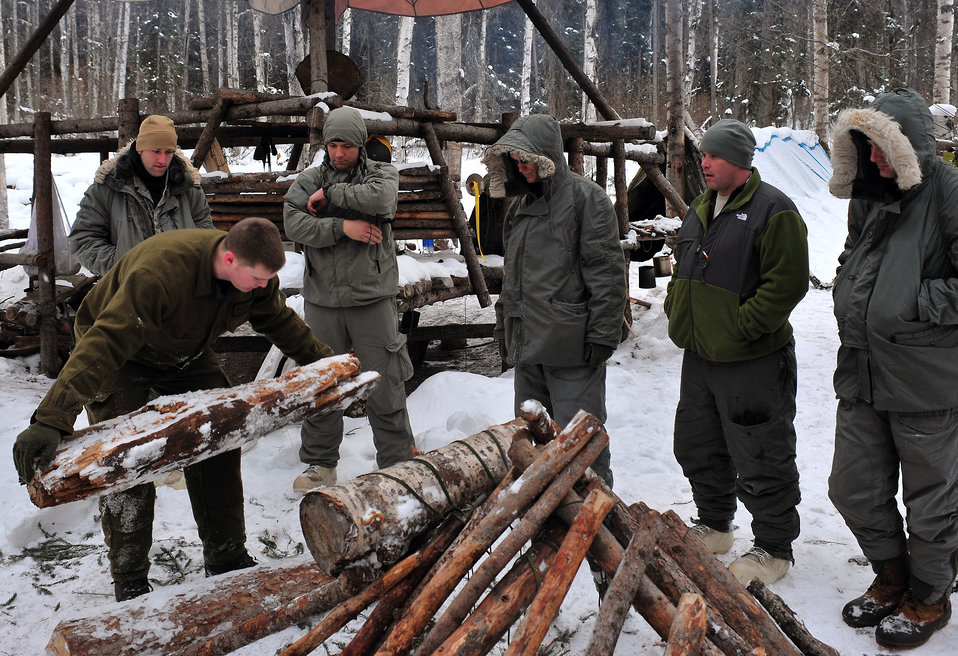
Learning survival skills in 'Cool School'

Senior Airman Jess Evans teaches a class how to choose and place kick-logs Feb. 25 at Eielson Air Force Base, Alaska. Kick-logs are used to fill the space between the earth and the area a door plug would fill on a thermalized A-frame. Airman Evans is an Arctic Survival School instructor.